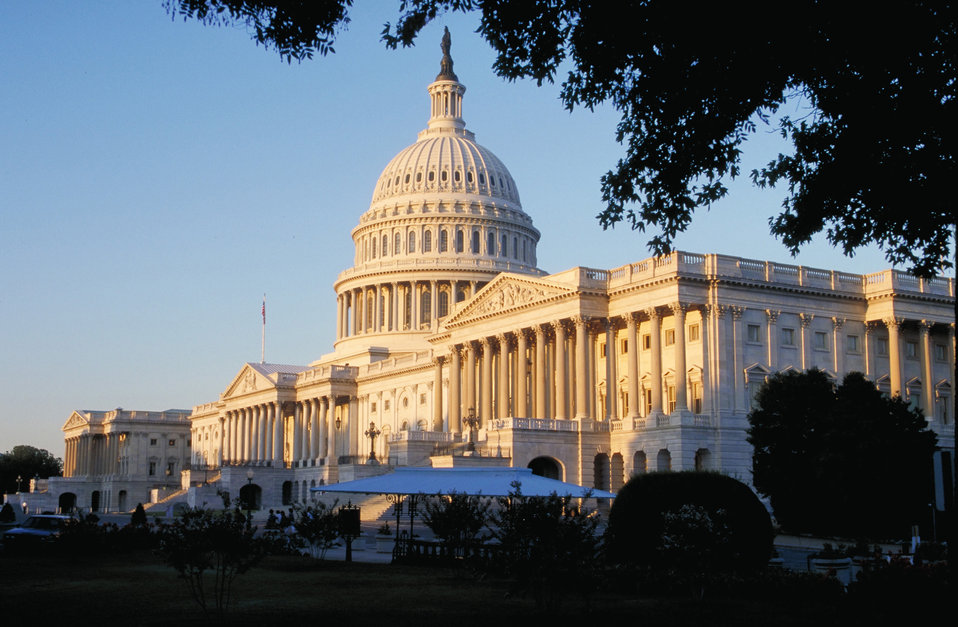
United States Capitol building in Washington, DC.